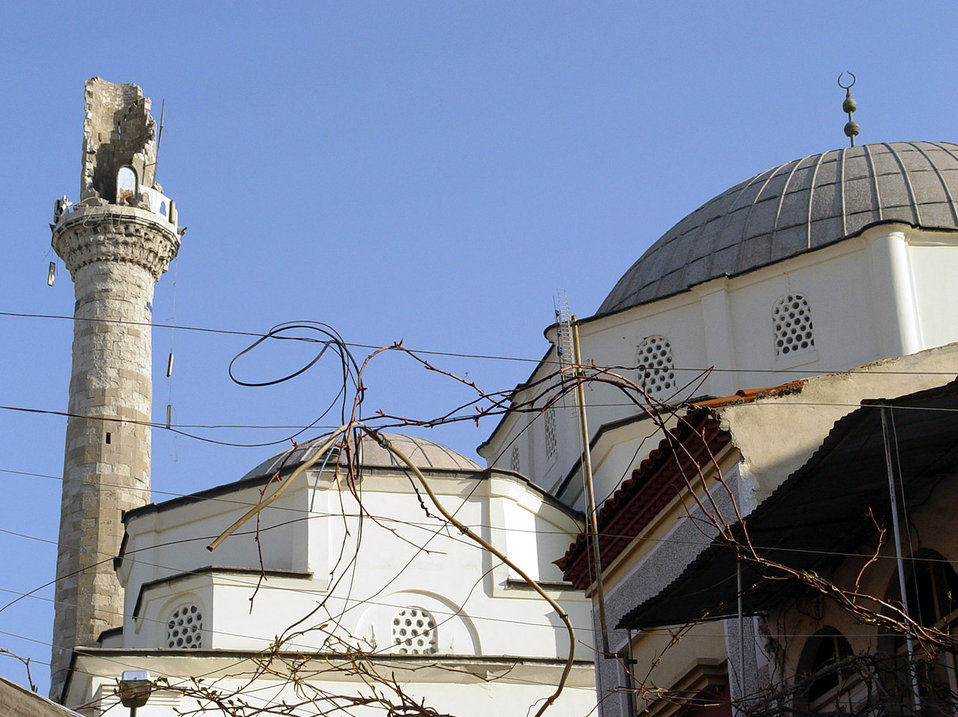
Earthquake shakes Izmir military community

HISAR, Turkey -- The top of the Hisar Mosque tumbled to the ground during an earthquake 35 miles southwest of Izmir, Turkey. Although the quake rattled a few windows and rearranged some furniture, there were no people injured or damage to facilities, according to 425th Air Base Squadron officials.